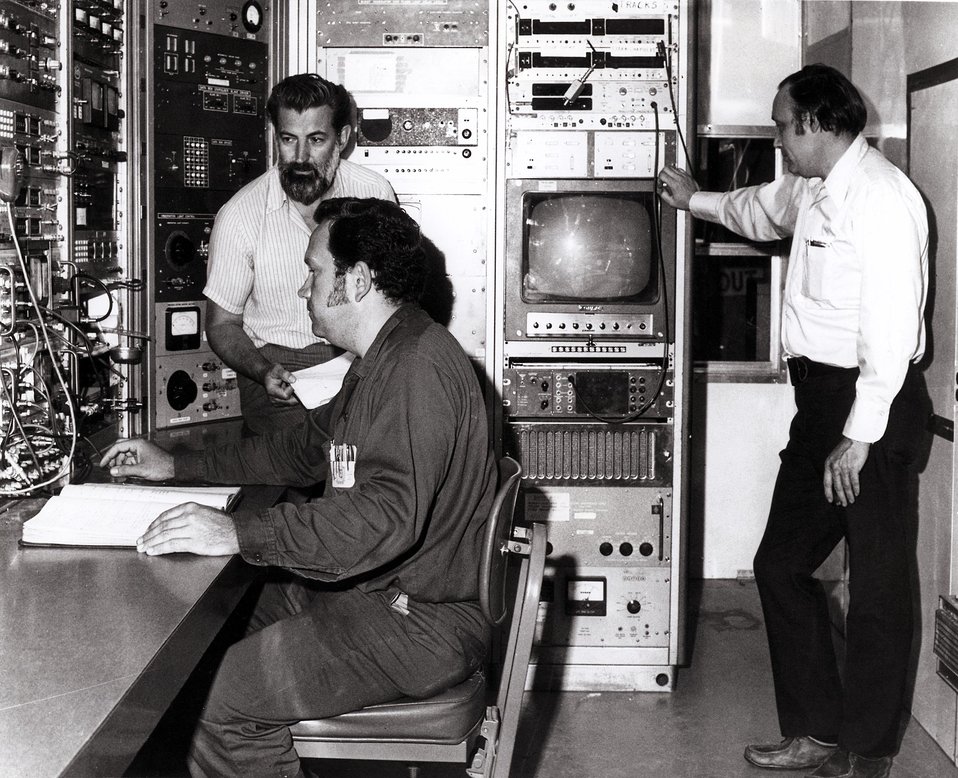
The control roof of the 30 inch bubble chamber at the Atomic Energy Commission's National Accelerator Laboratory, Illinois.